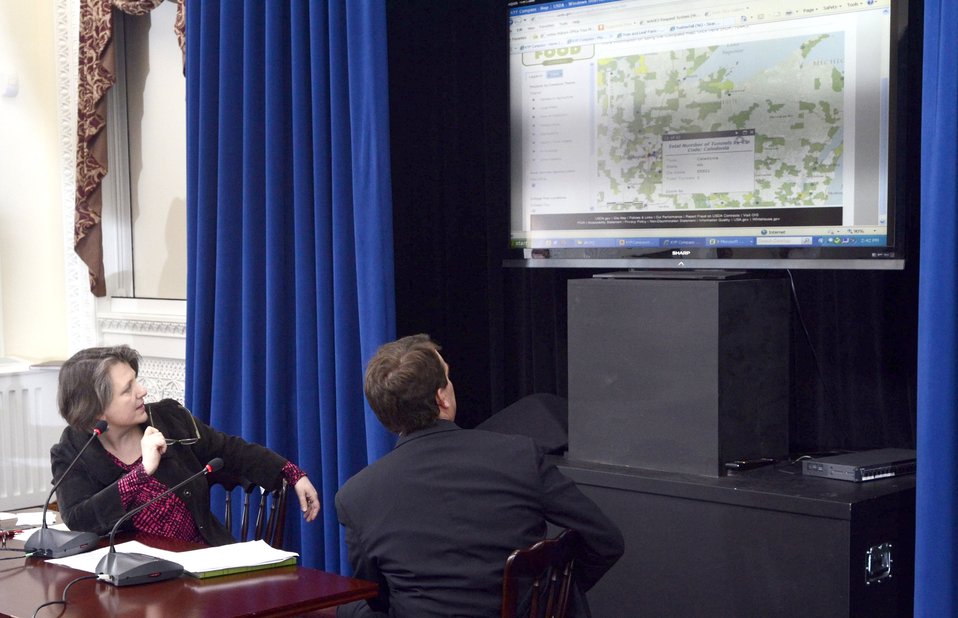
Agriculture Deputy Secretary Kathleen Merrigan and Director, White House Office of Public Engagement Jon Carson, during a Know Your Farmer Compass event that used twitter social media to continue the National Conversation on Local and Regional Food projects and how they offer economic opportunities to local farmers, ranchers and food entrepreneurs. The virtual conversation took place from the White House, in Washington, D.C., on Monday, March 5, 2012.